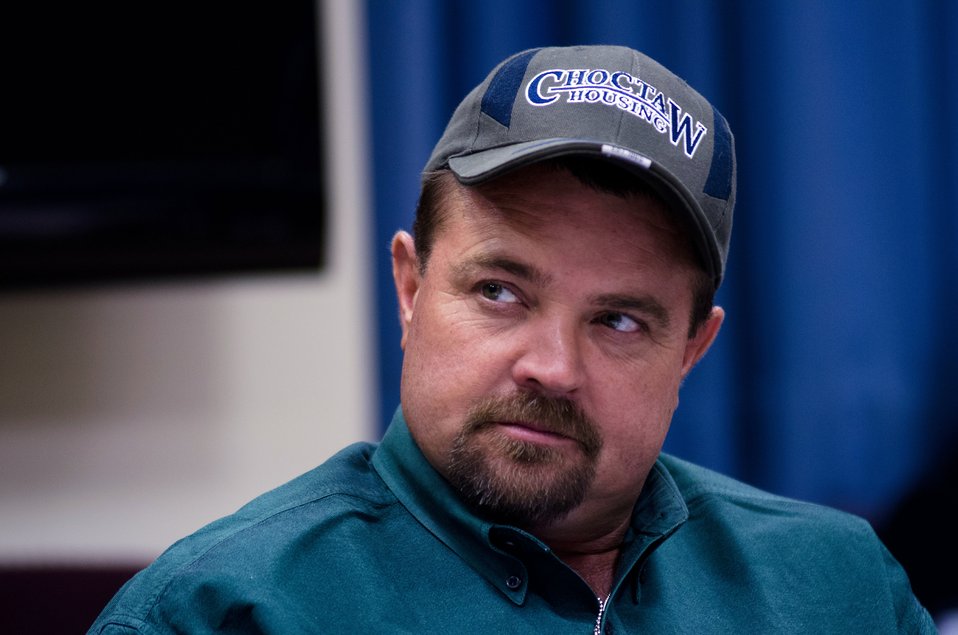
Farmer/Rancher Henry Holder of the Choctaw Nation, in Soper, OK, during the first administrative/training meeting of the U.S. Department of Agriculture's (USDA) Council for Native American Farming and Ranching (CNAFR) held on Monday, Aug. 13, 2012 at the USDA headquarters Whitten Building, in Washington, D.C. CNAFR was created to advise the Secretary on ways to eliminate barriers to participation for Native American Farmers and Ranchers in USDA programs. The Council was established as part of the Keepseagle settlement, and is conducted under the oversight of USDA's Office of Tribal Relations, which is part of the Office of the Secretary of Agriculture. The Director of Tribal Relations Joanna Mounce Stancil serves as Designated Federal Official (DFO) for the Council.